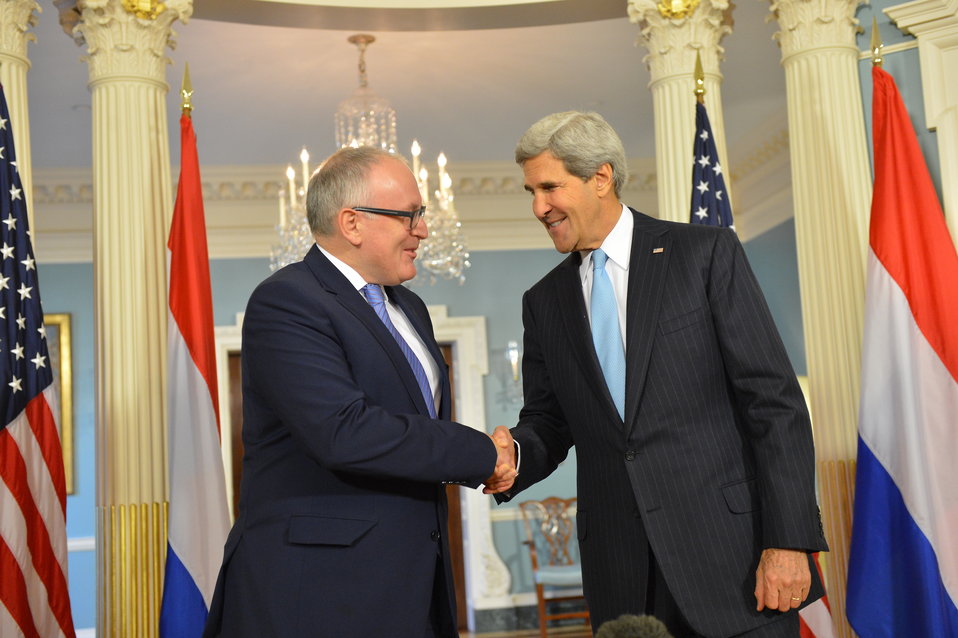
Secretary Kerry Shakes Hands With Dutch Foreign Minister Timmermans

U.S. Secretary of State John Kerry shakes hands with Dutch Foreign Minister Frans Timmermans after addressing reporters at the U.S. Department of State in Washington, D.C., on September 20, 2013.